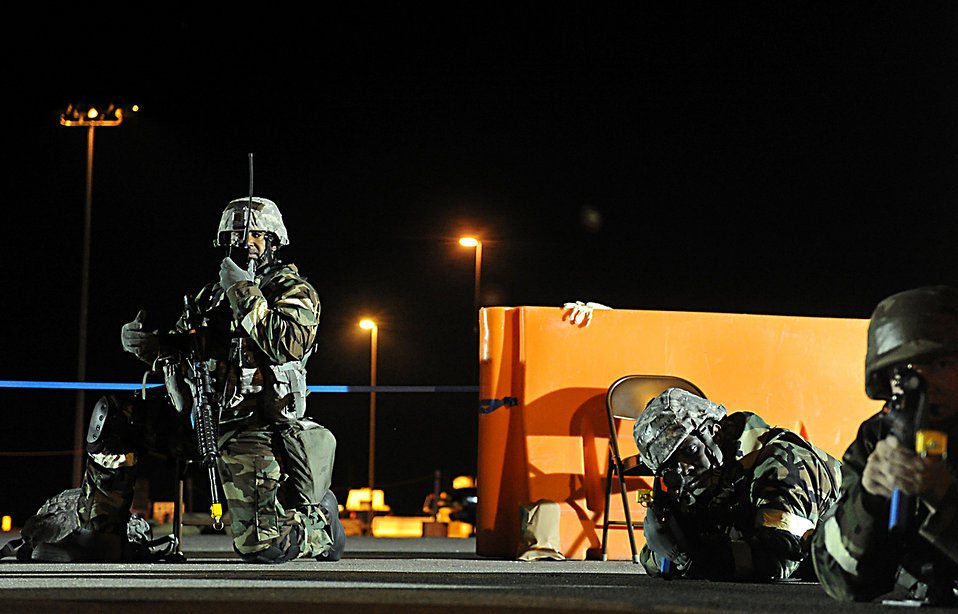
Mission ready

Airmen from Joint Base Charleston, S.C. participate in an operational readiness exercise Oct. 27, 2011, at the Air National Guard Combat Readiness Training Center in Gulfport, Miss. The ORE evaluates Airmen’s mission readiness in preparation for real world deployments.